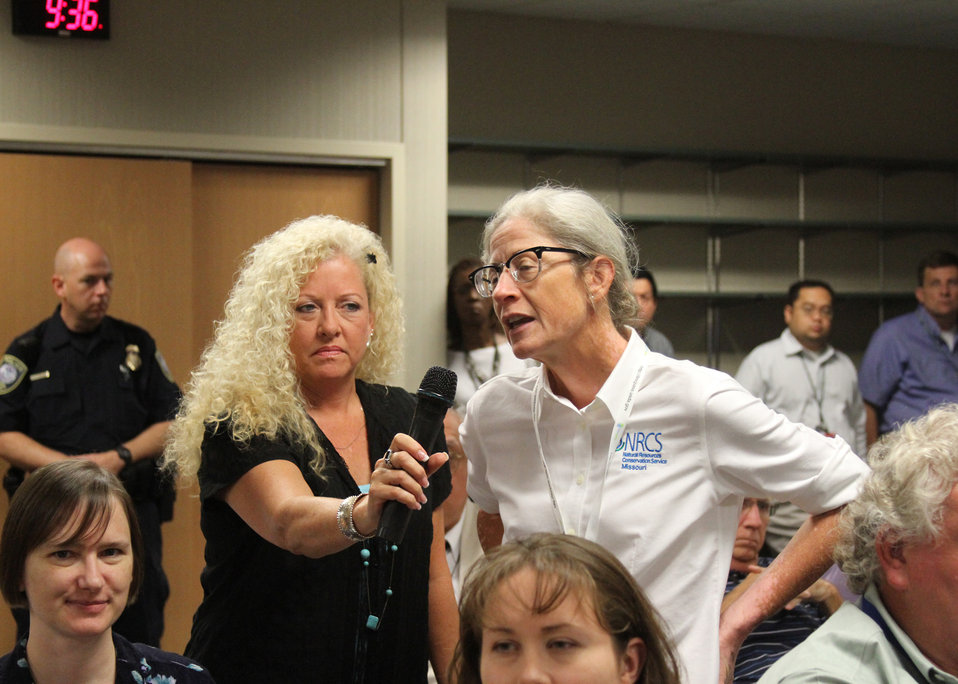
USDA Natural Resource and Conservation Service (NRCS) employee Pat Hufford (right) asks Agriculture Secretary Tom Vilsack a question at the “Ask the Secretary” informal listening sessions with USDA employees as part of the Cultural Transformation initiative to transform the culture at USDA. Listening sessions are held at local field offices and provide employees an opportunity to talk directly to the secretary about issues, problems and solutions. This session was held at a USDA Service Center in Kansas City, MO, on Wednesday, July 27, 2011.